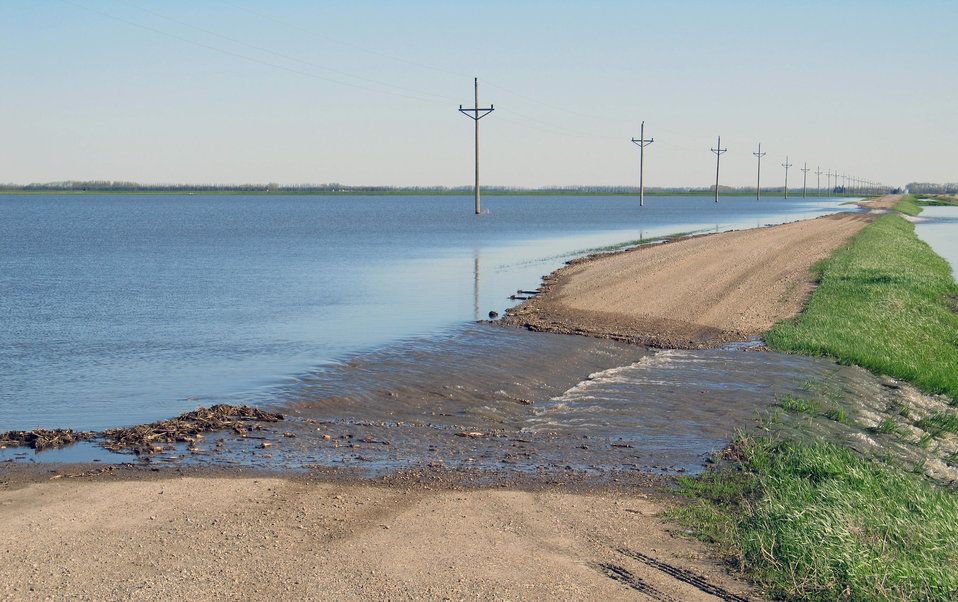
Flooding and water damage in the Park and Tongue River Watersheds located in Cavalier, Pembina and Cavalaier Counties in ND on Thursday, May 23, 2013.